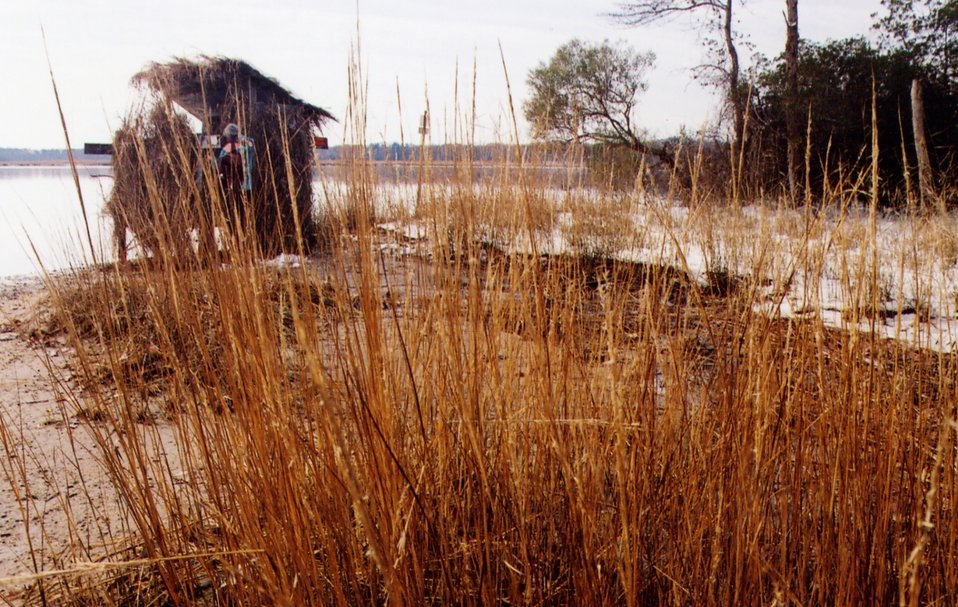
Patuxent River duck blind.